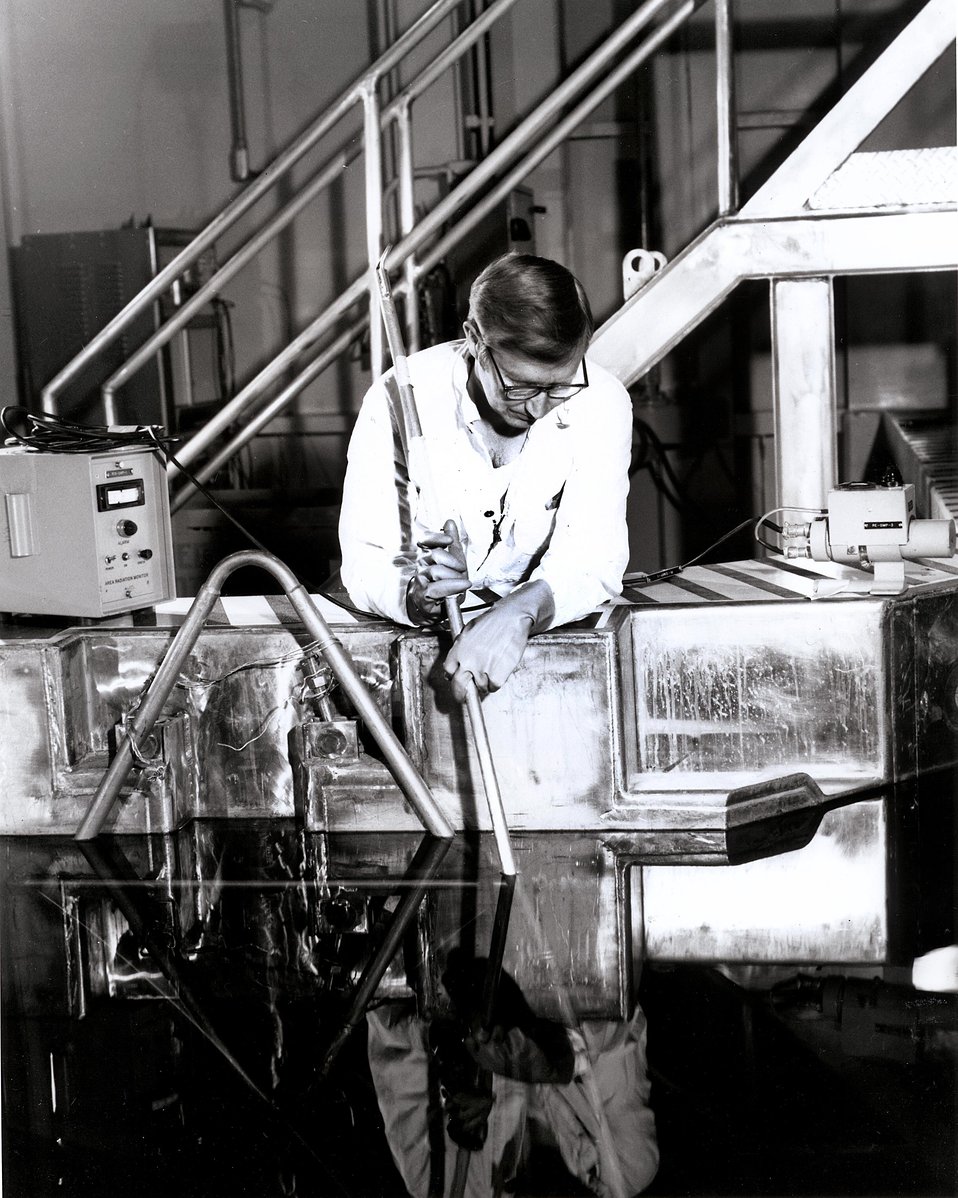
Worker using a portable area radiation monitor.